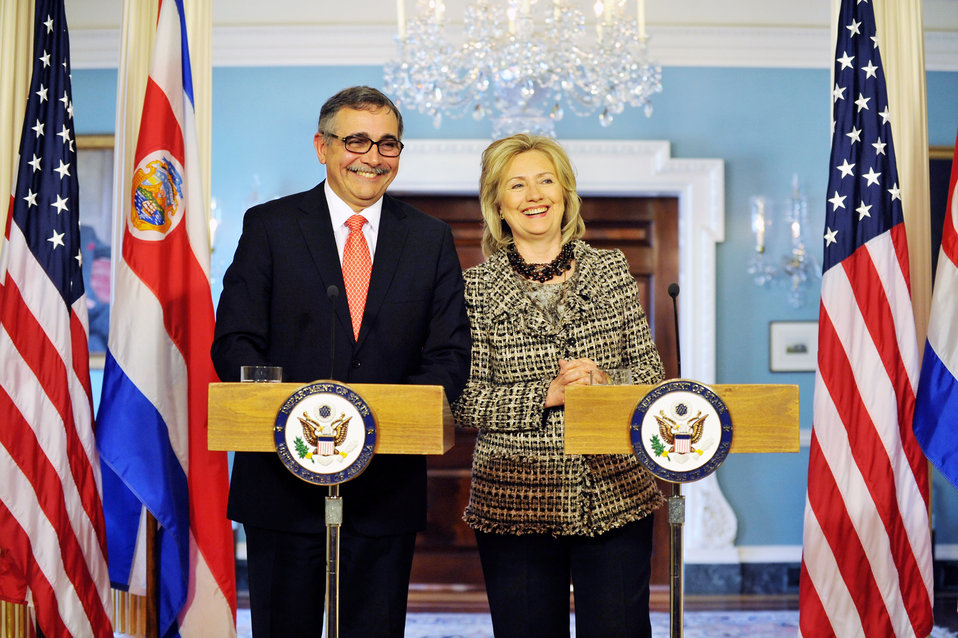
Secretary Clinton Smiles for a Photo With Costa Rican Foreign Minister Castro

U.S. Secretary of State Hillary Rodham Clinton and Costa Rican Foreign Minister René Castro smile for a photo after their joint press conference at the U.S. Department of State in Washington, D.C., on March 4, 2011.